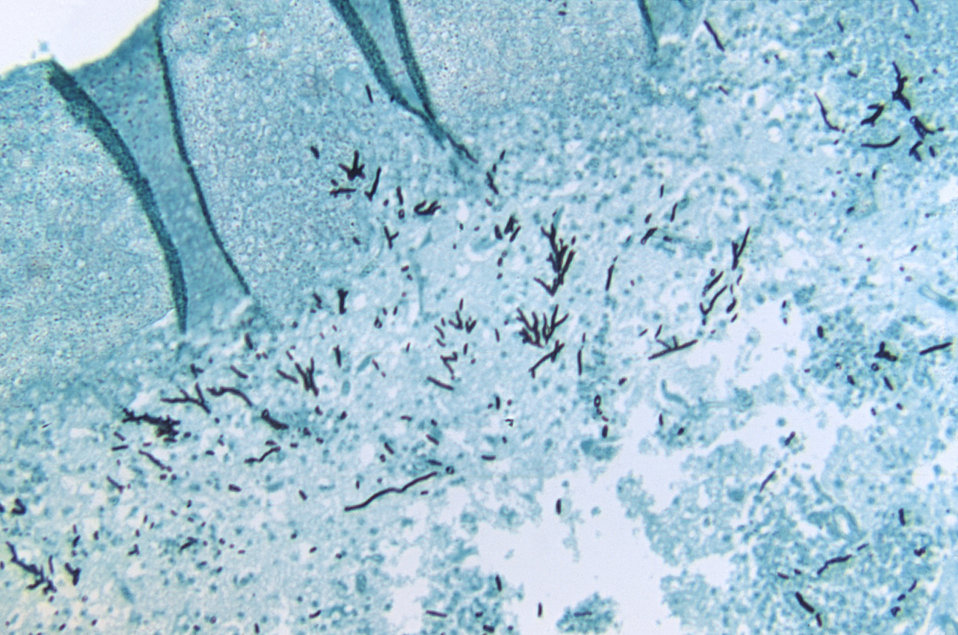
This photomicrograph revealed the presence of Aspergillus fumigatus fungal organisms in a brain tissue, methenamine silver-stained specimen harvested from a turkey poult that had contracted this infection.What it Aspergillus?